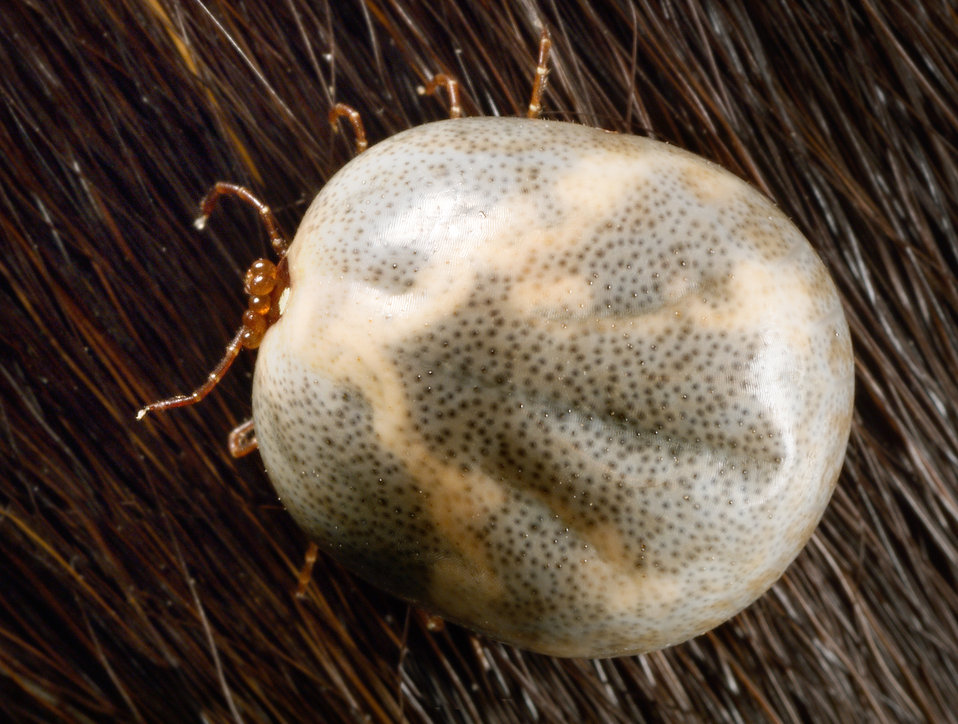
This photograph depicts a dorsal view of an engorged female 'lone star tick', Amblyomma americanum. An ixodid or 'hard' tick, A. americanum is found through the eastern and south-central states and can transmit disease agents that affect humans, dogs, goats, and white-tailed deer. Representatives from all three of its life stages aggressively bite people in the southern U.S. Lone star ticks transmit Ehrlichia chaffeensis and Ehrlichia ewingii, both of which cause disease. Borrelia lonestari, a pathogen associated with 'Southern tick-associated associated rash illness' (STARI), also infects lone star ticks. Research suggests that up to 10% of the lone star ticks in an endemic area can be infected with any one of these pathogens. These ticks also are infected with a spotted-fever group Rickettsia, 'Rickettsia amblyommii' but it is unknown at this time if this bacterium causes disease.